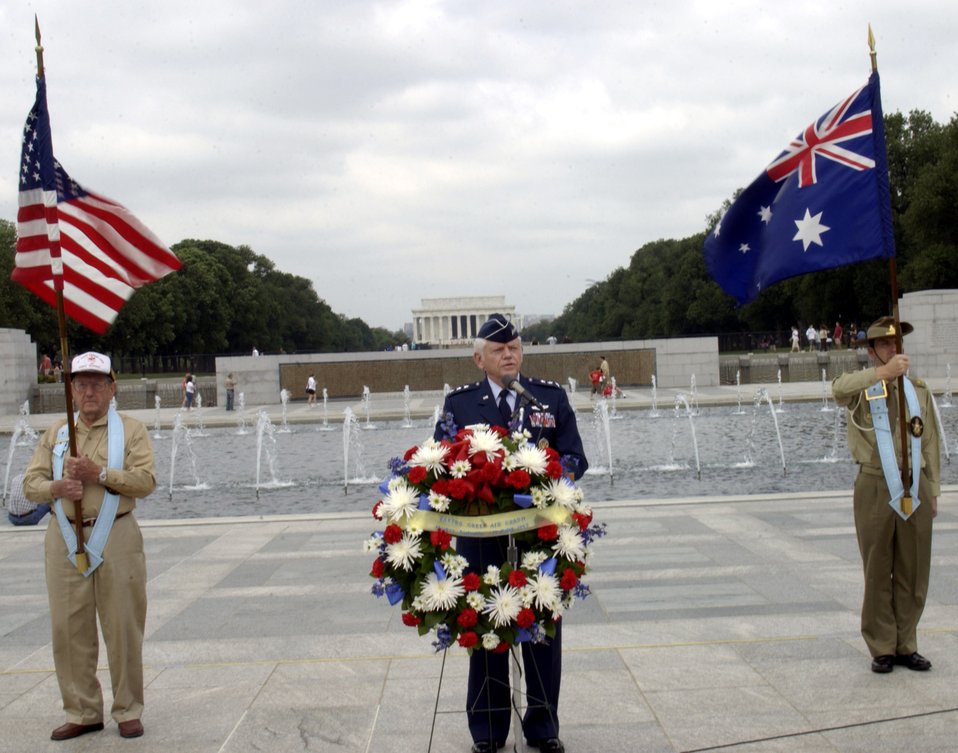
Fallen Bakers Creek servicemembers honored at WWII Memorial

At a ceremony at the World War II Memorial June 14 in Washington D.C., Lt. Gen. Arthur Lichte, Air Force assistant vice chief of staff, recounted the Bakers Creek air crash in Australia in June 1943 in which 40 American servicemembers lost their lives. The ceremony here commemorated the 64th anniversary of the crash.